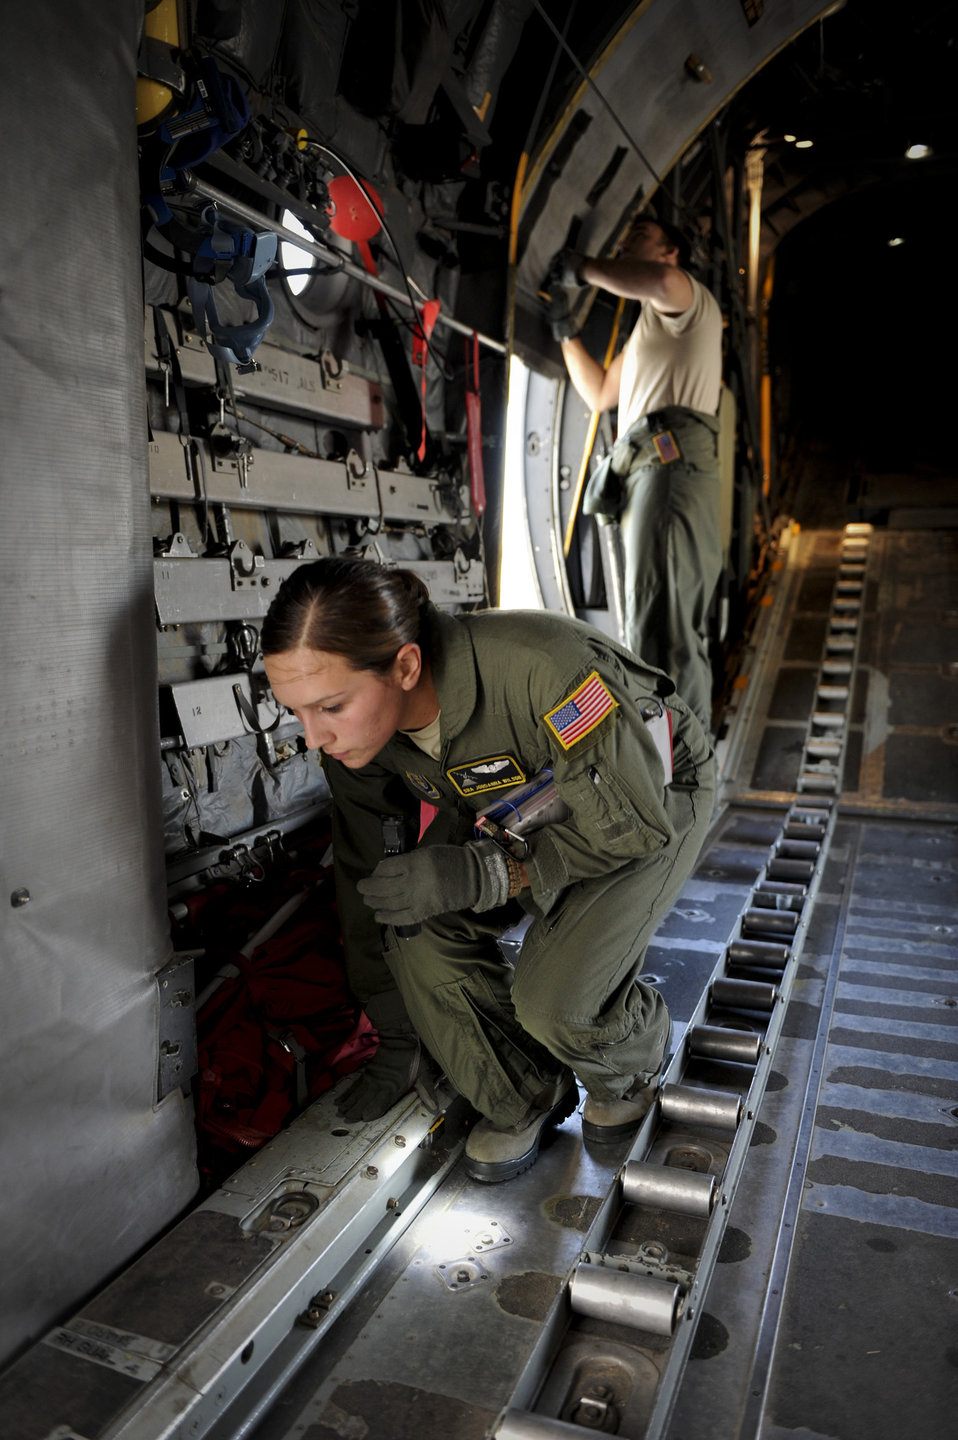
Ensuring a safe flight

Senior Airman Jordanna Wilson and Tech. Sgt. Jonathan Paszkot, both with the 36th Airlift Squadron, perform preflight checks on a C-130 Hercules at Yokota Air Base, Japan, Nov. 1, 2011. The Airmen were preparing for Samurai Surge, during which six C-130s demonstrated their airdrop and large formation capabilities.